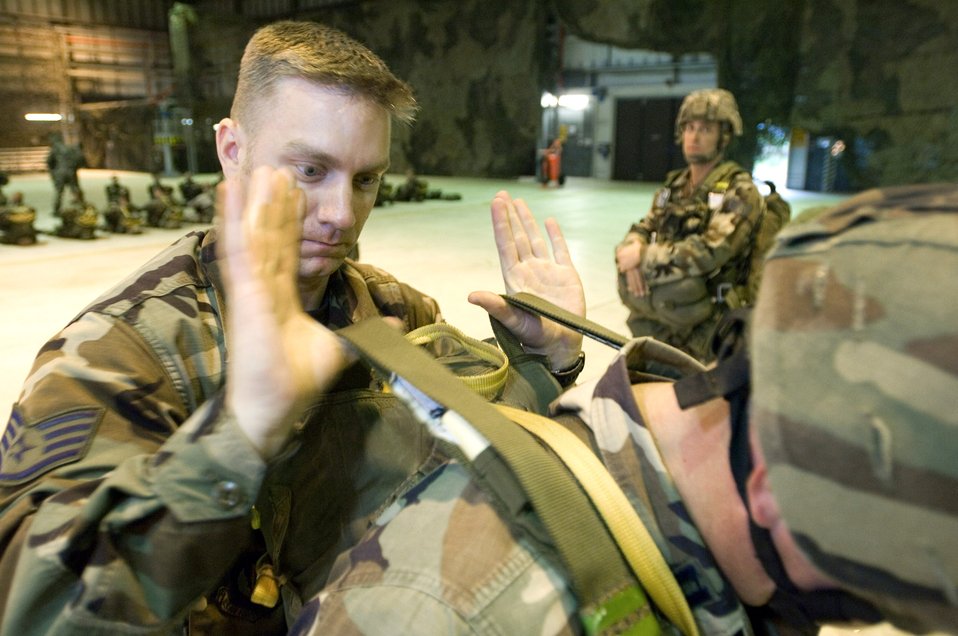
Parachute inspection

Staff Sgt. Marc Hawsey inspects the parachute on a paratrooper preparing to board a C-130 Hercules at Ramstein Air Base, Germany, on Thursday, April 27, 2006. Sergeant Hawsey is a jumpmaster with the 786th Security Forces Squadron at nearby Sembach Air Base.